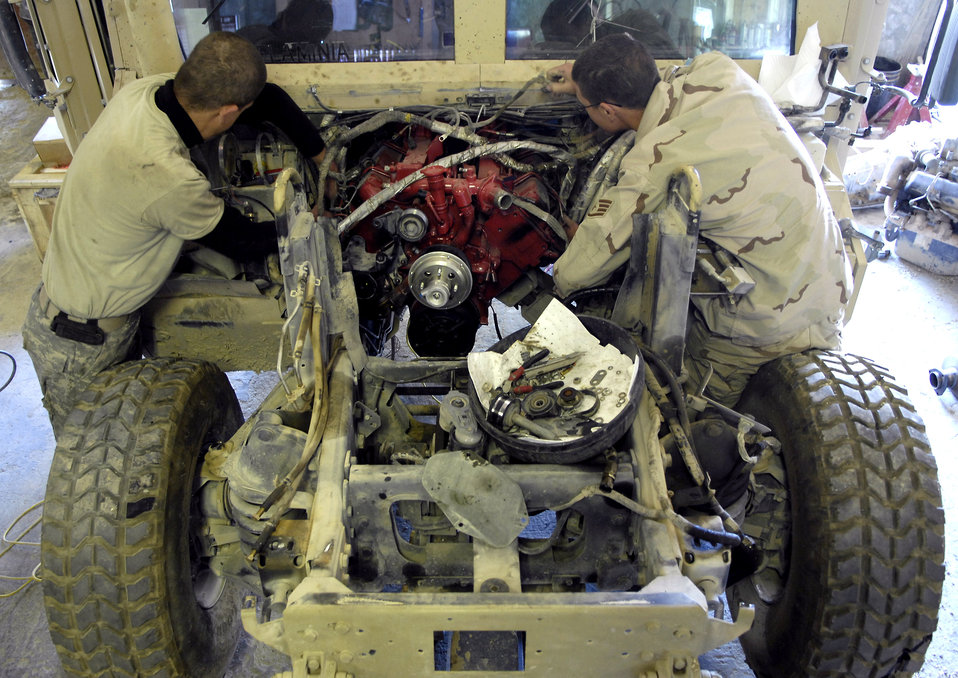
'In-lieu-of' Airmen keep Army rolling along

Tech. Sgt. James Nelson and Staff Sgt. Logan Pike work on the wiring harness of a Humvee Nov. 1 at forward operating base Lagman, Afghanistan. Sergeants Nelson and Pike are filling 365-day Army 'in-lieu-of' taskings. Sergeant Nelson is deployed from Nellis Air Force Base, Nev., while Sergeant Pike is deployed from Malmstrom AFB, Mont.